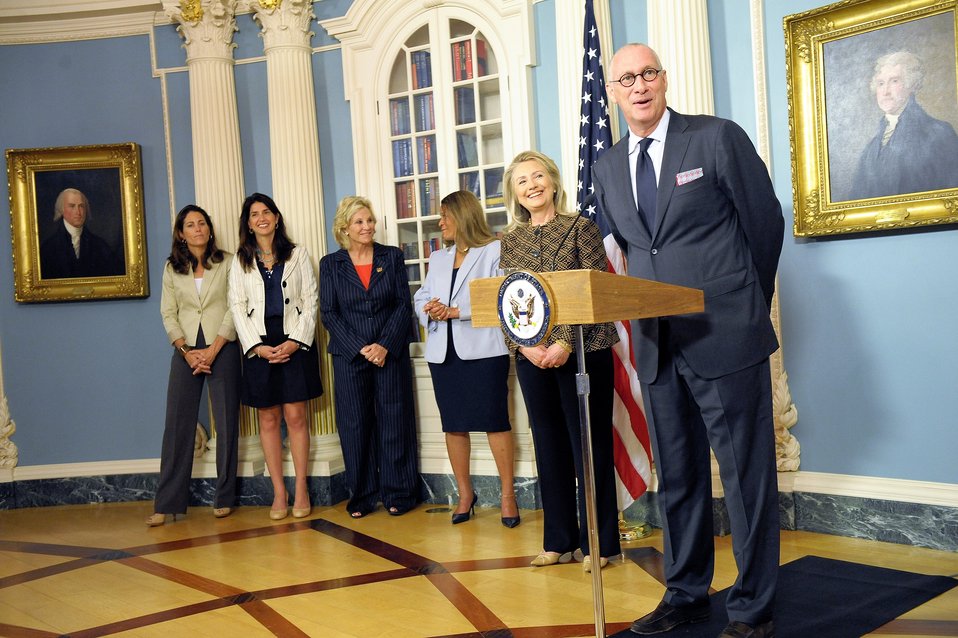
Secretary Clinton With ESPN President Skipper

U.S. Secretary of State Hillary Rodham Clinton and and ESPN President John Skipper make an announcement regarding international efforts to empower women and girls through sports at the U.S. Department of State in Washington, D.C., on June 21, 2012.